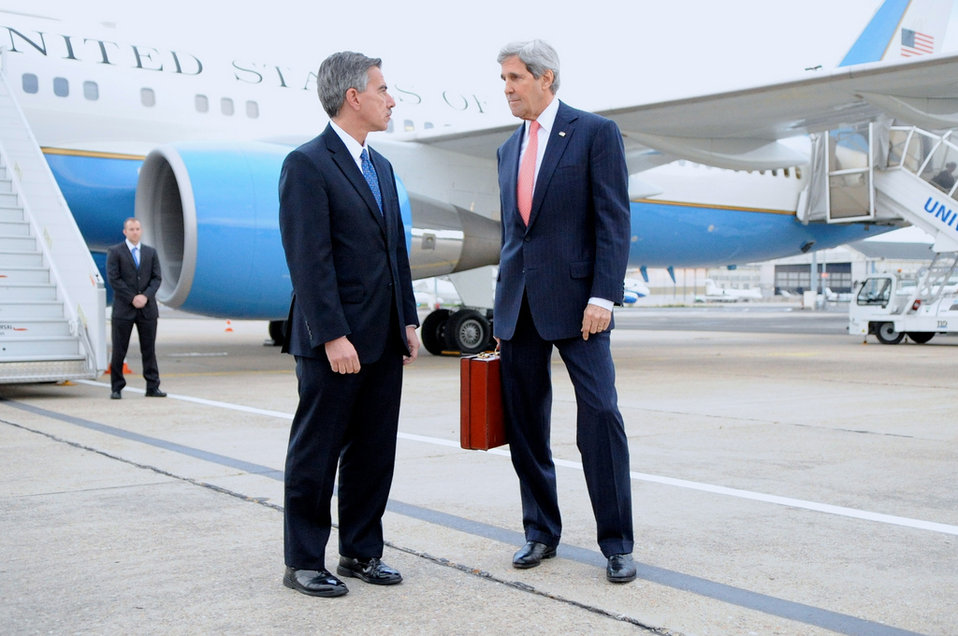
Secretary Kerry, Charge d'Affaires Taplin Speak on Paris Tarmac

U.S. Secretary of State John Kerry chats with U.S. Embassy Paris Charge d'Affaires Mark Taplin at Le Bourget Airport on March 29, 2014, after breaking off his return to the United States from Saudi Arabia to meet with Russian Foreign Minister Sergey Lavrov in France to discuss Ukraine.